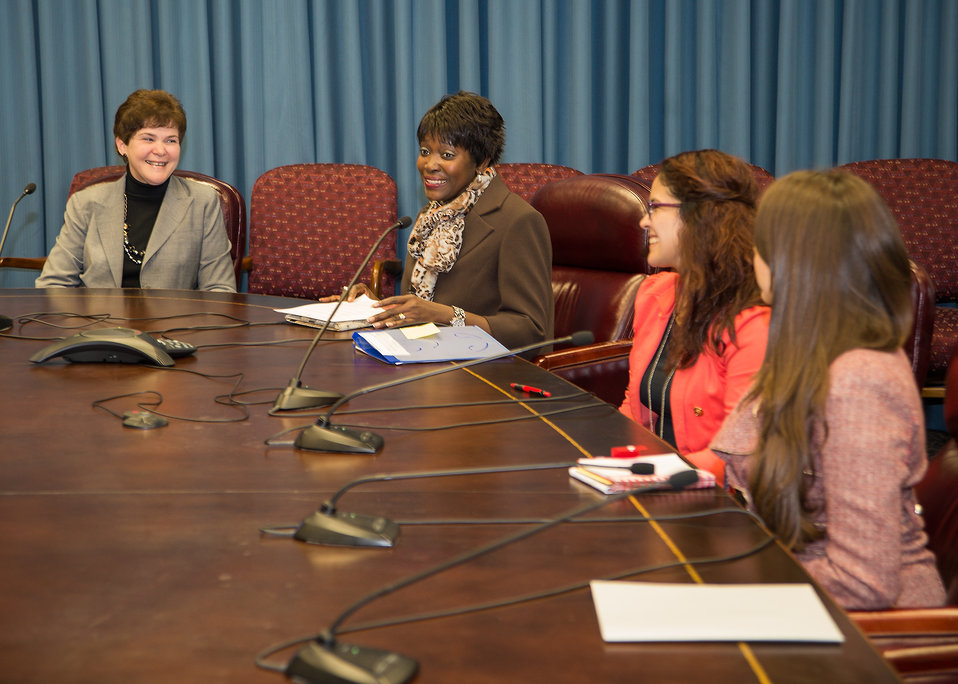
Agriculture Deputy Secretary Krysta Harden and U.S. Department of Agriculture (USDA) Office of Advocacy and Outreach Director Carolyn Parkerwelcome the Hispanic Association of Colleges and Universities (HACU) National Internship Program Fall 2014 Interns to the Pathways Programs for Students and Recent Graduates to Federal Careers atat USDA on Tuesday, Dec. 3, 2013 in Washington, D.C.